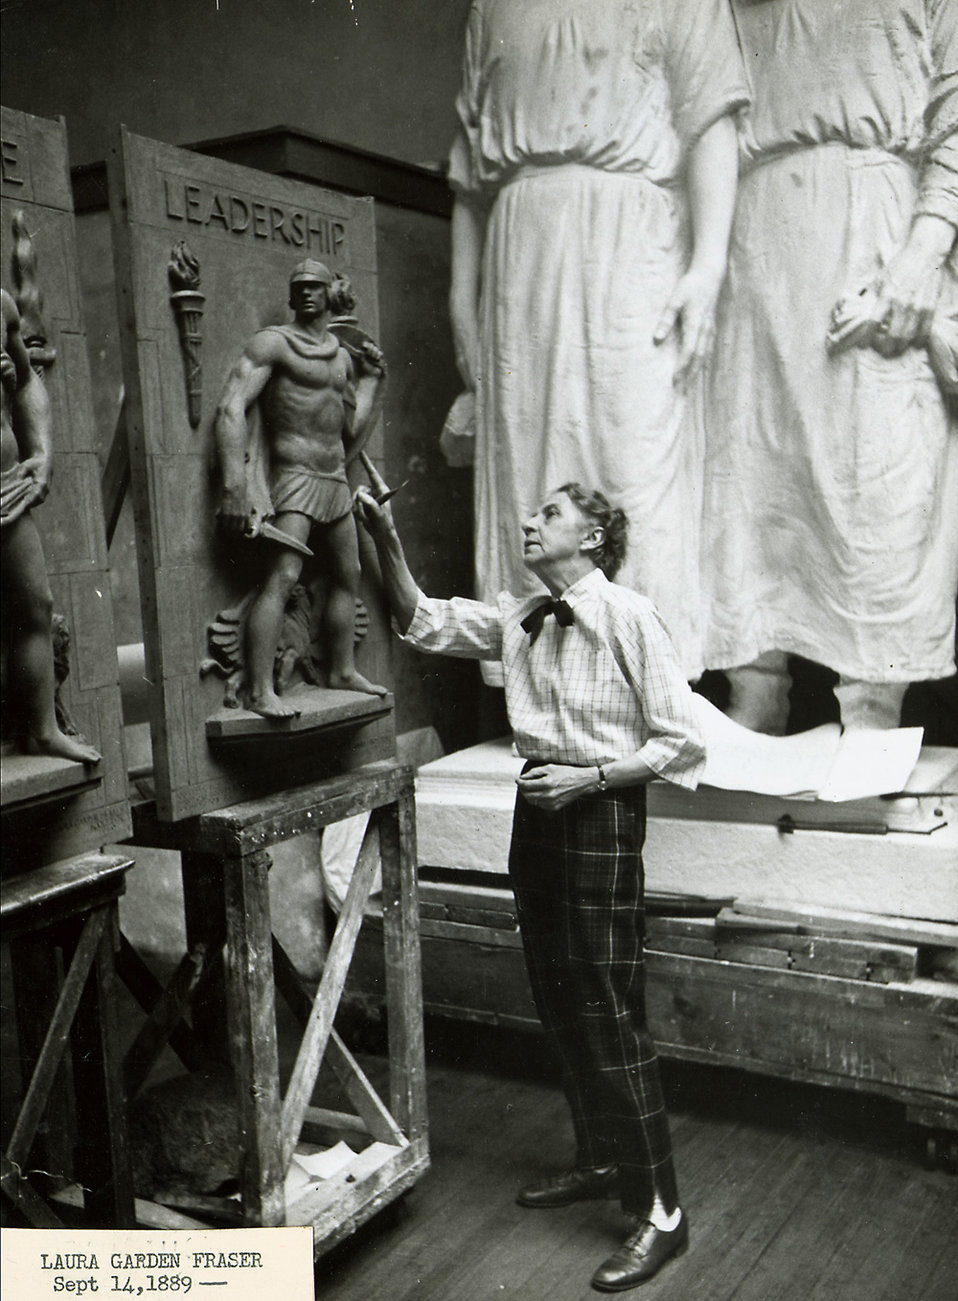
Laura Gardin Fraser (1889-1966) - Women Artists

Sculptor of three relief portrait plaques of lawgivers in the House Chamber: Colbert, Edward I, Papinian.